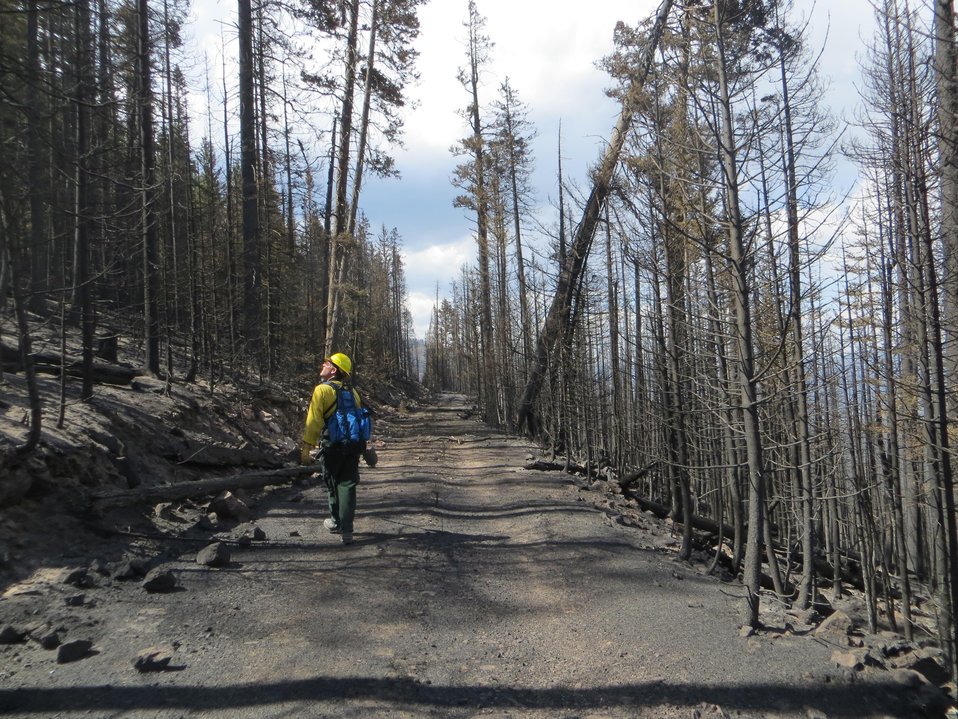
Burned Area Emergency Response (BAER) assessment teams examine the burned out areas at the Thompson Ridge Fire in the Sante Fe National Forest approximately 10 miles north of Jemez, NM. The fire began on May 31, 2013 by human ignition has consumed over 29, 903 acres. BAER teams are comprised of specialists that are highly experienced in conducting rapid watershed assessments and analyses and may include soil scientists, hydrologists, geologists, biologists, geographic information system specialists, archeologists, botanists, silviculturists, and civil engineers. (Silvaculturists are individuals that specialize in the care and cultivation of forest trees).